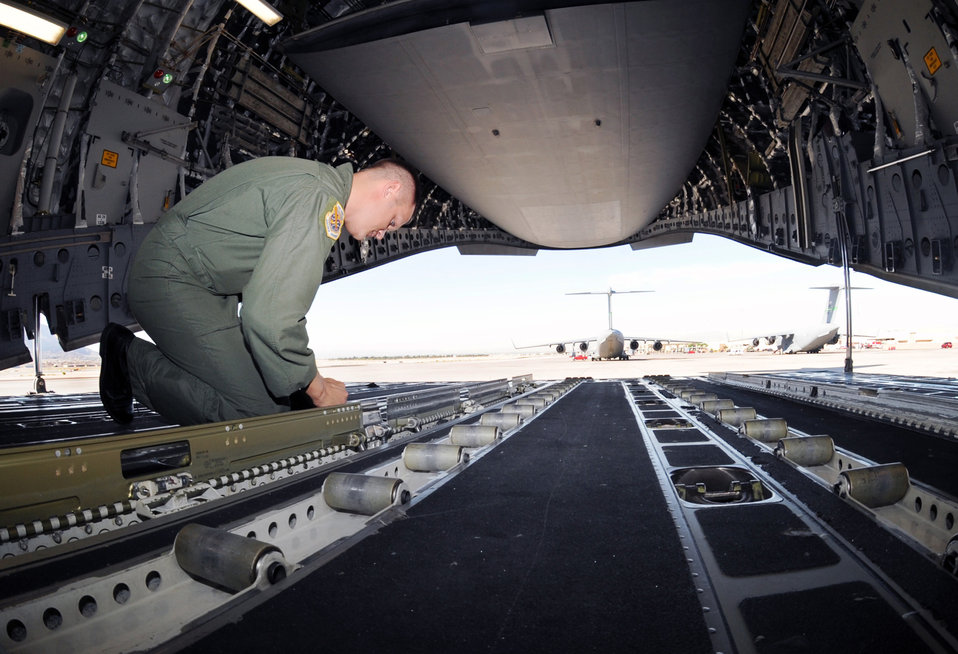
Testing mobility forces

Tech. Sgt. Joshua Hoogstra performs a preflight inspection on a C-17 Globemaster III during the Mobility Air Forces Exercise May 20 at Nellis Air Force Base, Nev. He is a loadmaster assigned to Headquarters Air Mobility Command at Scott Air Force Base, Ill.